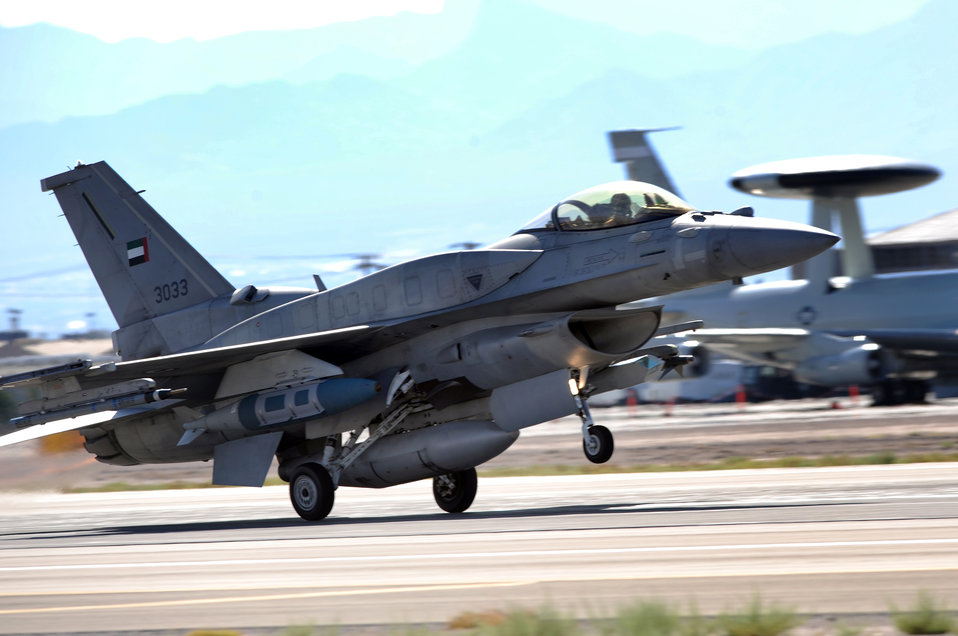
Red Flag trains combat air forces

An F-16E from the United Arab Emirates takes off for a training mission during Red Flag 09-5 Aug. 26, 2009, at Nellis Air Force Base, Nev. This is the first time the nation has participated in Red Flag.